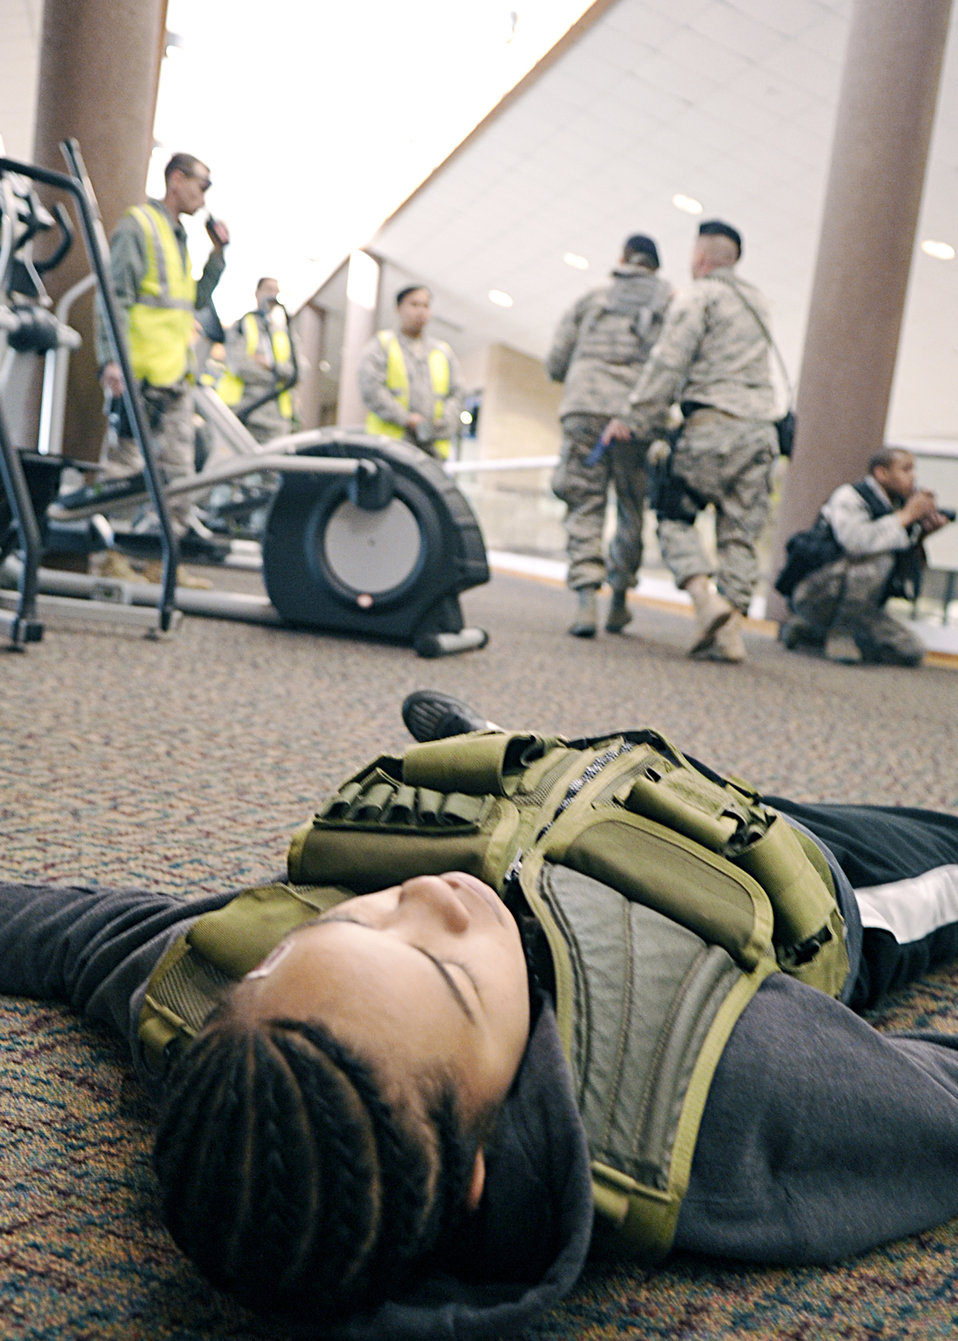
Holloman Airmen train for worst in active shooter exercise

Senior Airman Lauren Moss role-plays a deceased gunman at the Domenici Fitness and Sports Center after security forces Airmen take control of the situation March 11, 2010, at Holloman Air Force Base, N.M. The active shooter exercise helped prepare the 49th Fighter Wing members for future exercises and possible real-world situations. Airman Moss is assigned to the 49th Aeromedical Dental Squadron.